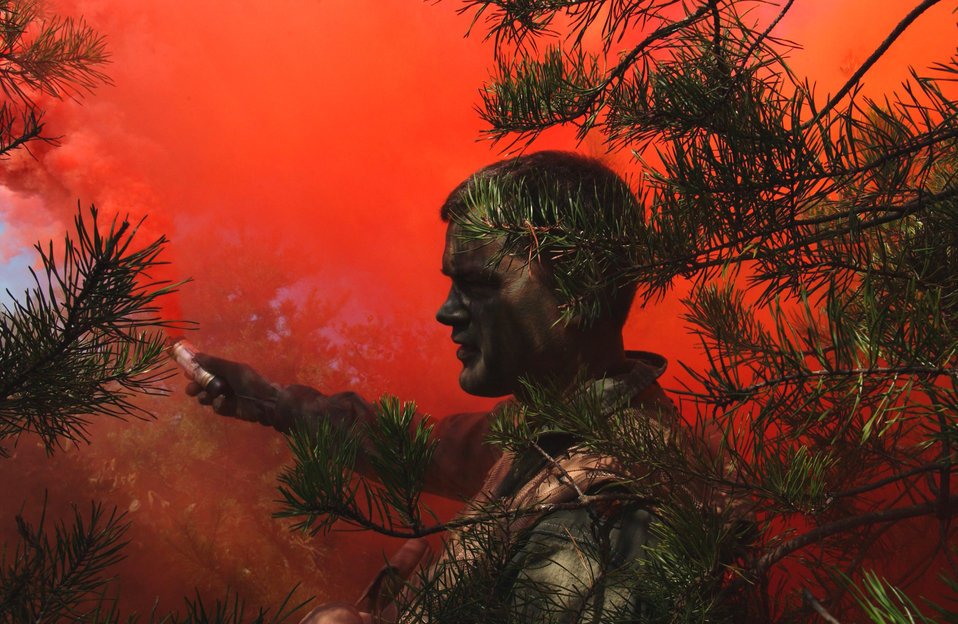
Life-saving training at Osan AB

Maj. Paul Neidhardt sets off a flare during combat search and rescue training Sept. 21 near Osan Air Base, South Korea. Annual training is conducted by survival, evasion, resistance and escape instructors to reacquaint aircrew members with combat search and rescue procedures and techniques. Major Neidhardt is with the 25th Fighter Squadron at Osan AB.